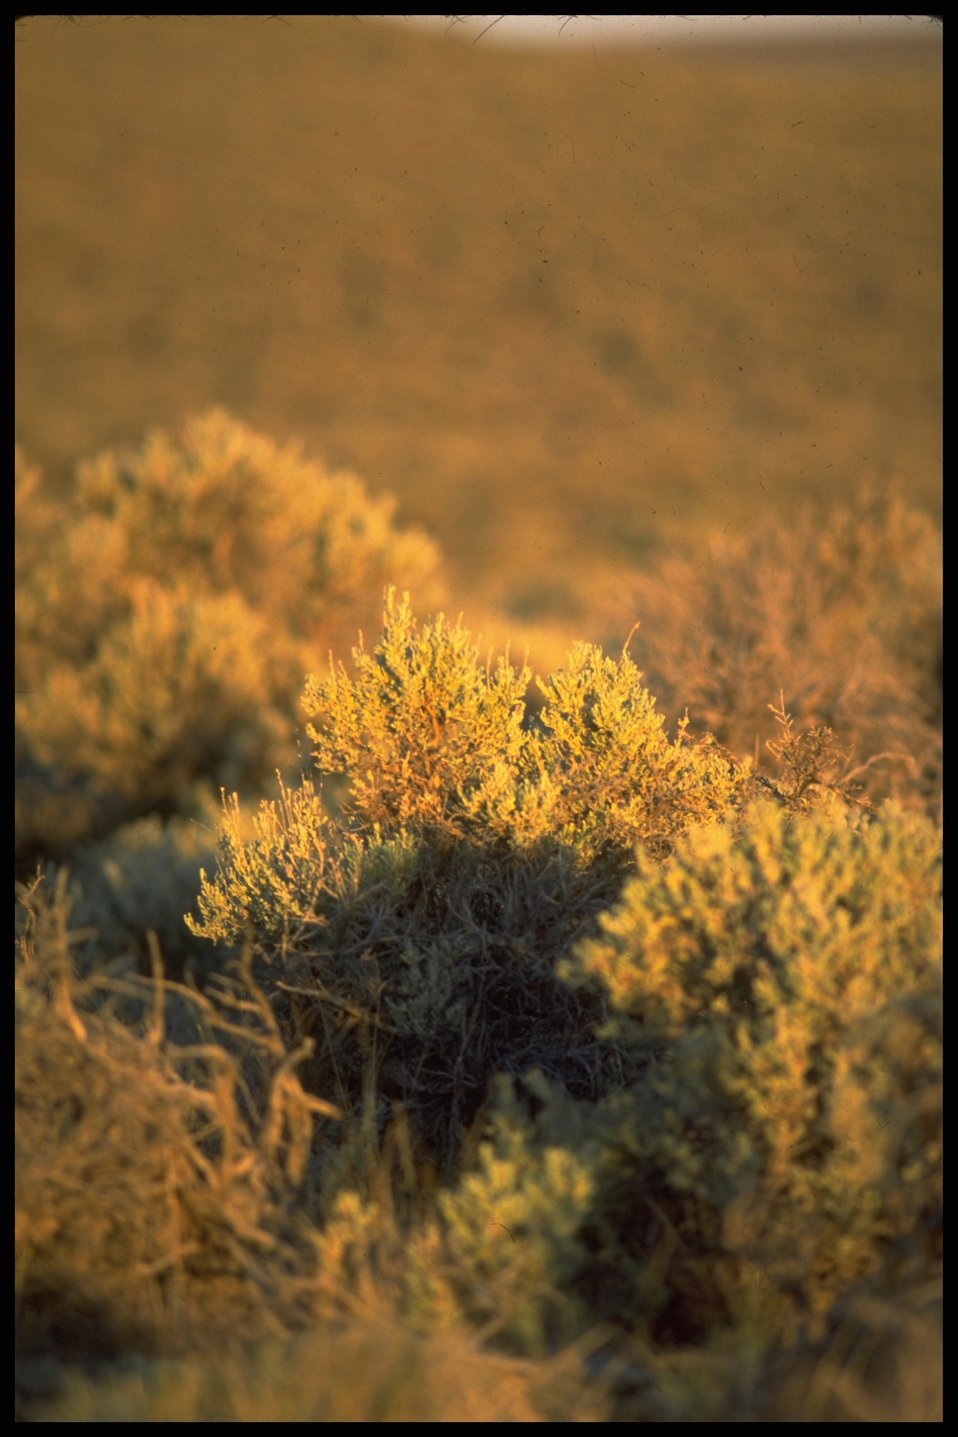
Close shot of sagebrush, Lakeview District.